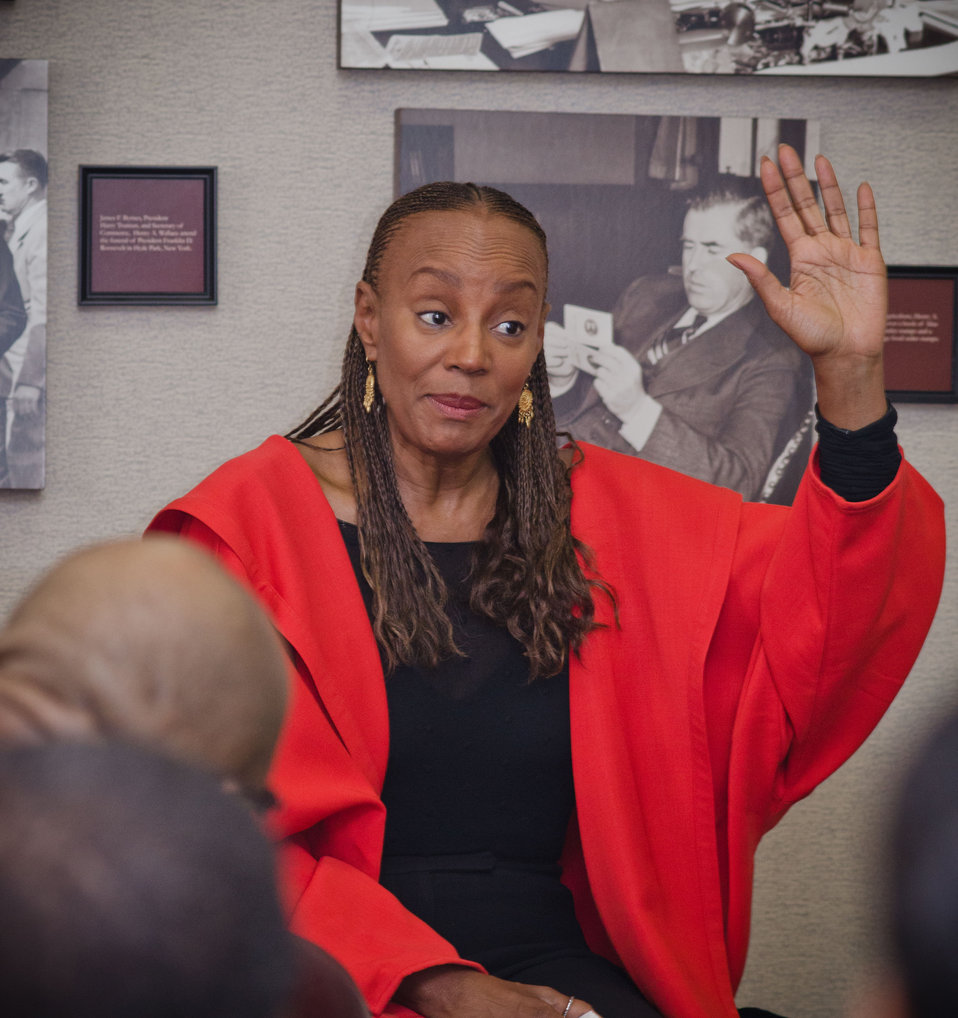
National CARES Mentoring Movement founder and Editor-in-Chief Emeritus, Essence magazine, Susan Taylor (red coat), met for a cross-departmental discussion with Department of Agriculture and Department of Energy personnel in the Whitten Building, U.S. Department of Agriculture, in Washington, D.C., on Tuesday, February 28, 2012. This not-for-profit organization is dedicated to recruiting and connecting mentors with local youth and mentoring organizations to help guide under-resourced children to academic and social success across the country. This discussion provided a continuation of the White House Policy in Action conference that took place in November 2011. The focus of the discussion was about how existing federal programs and administration priorities can be leveraged with her organization, especially as it relates to science, technology, engineering and mathematics (STEM) literacy, education and rural youth.